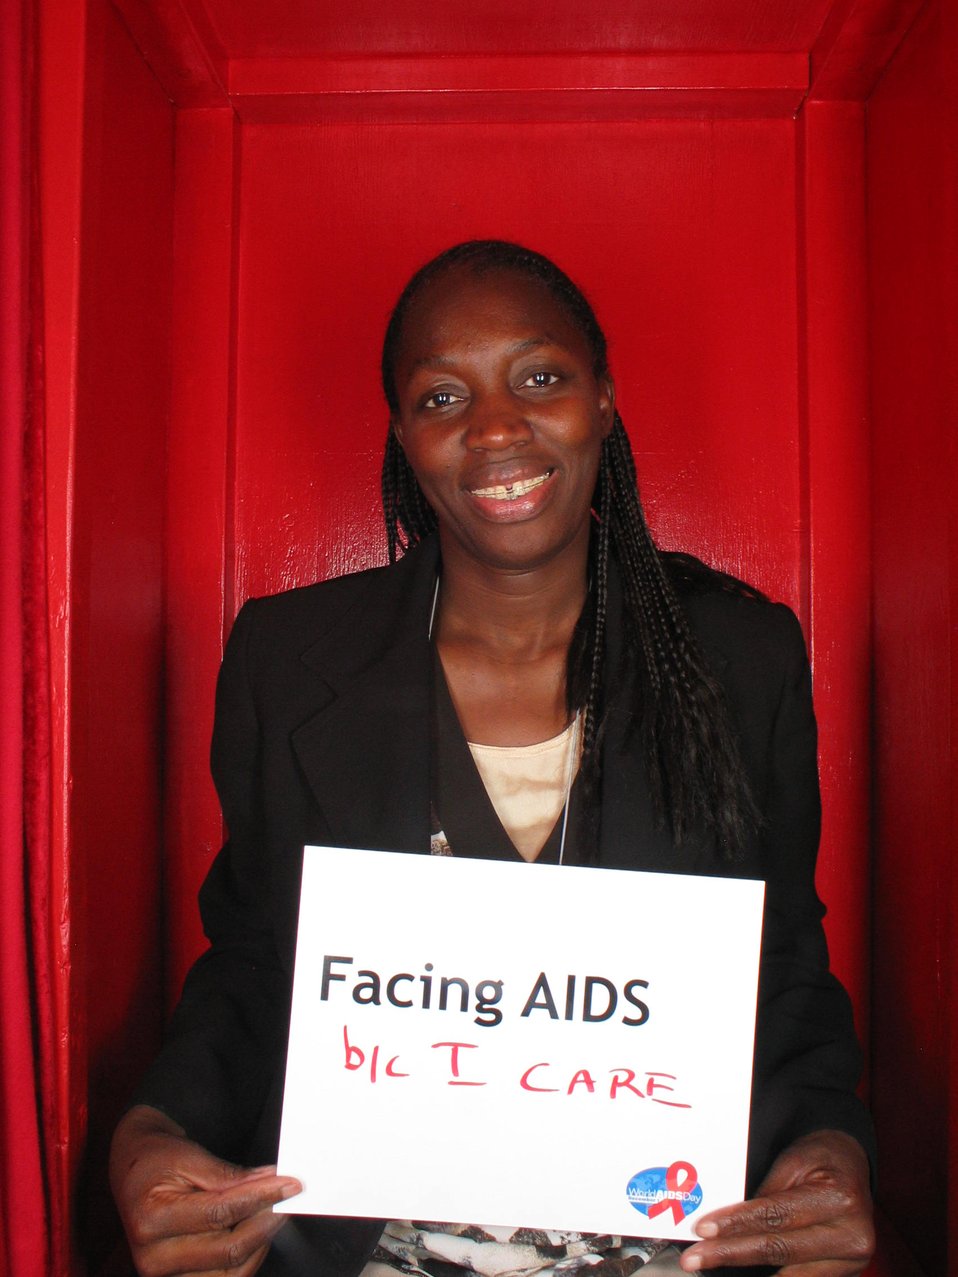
Facing AIDS because I care.